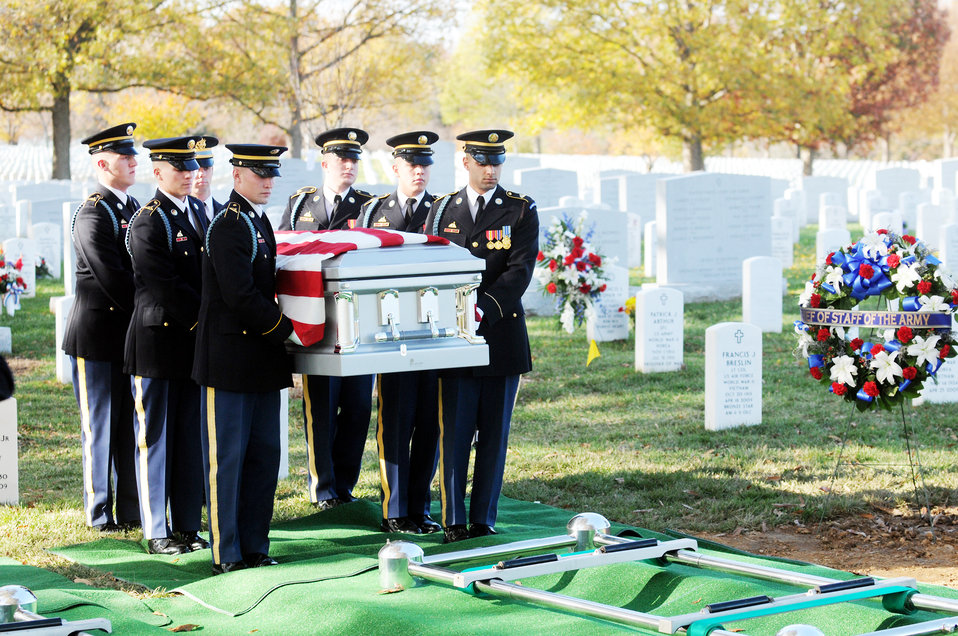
Funeral highlights search for missing servicemembers

Several military members carry the remains of a fallen servicemember of the World War II B-25 aircrew that were lost Dec. 5, 1942, near Papua, New Guinea, at an interment ceremony in Arlington National Cemetery in Virginia.